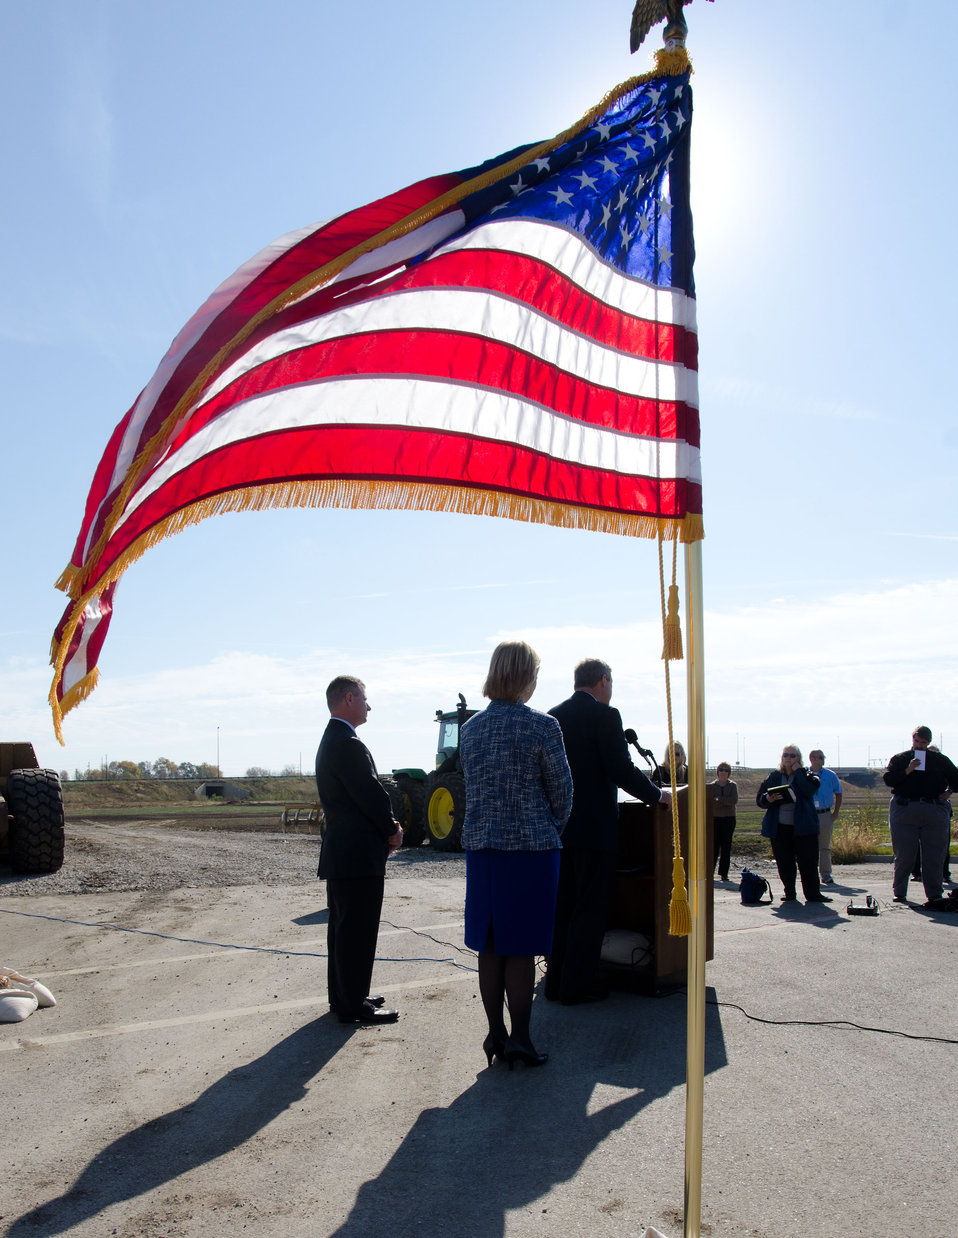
U.S. Department of Agriculture Secretary Tom Vilsack (at podium), Illinois Department of Transportation Acting Secretary of Transportation Ann Schneider (second from l.) and Sangamon County Recorder of Deeds (left) visited a recently completed transportation project that extended the existing MacArthur Boulevard and new interchange with Interstate 72, that brought new businesses and 500 new jobs to Springfield, IL on November 2, 2011. Agriculture Secretary Tom Vilsack discussed the Administration's strategy to strengthen the U.S. economy and to highlight what passage of the American Jobs Act will mean for Illinois. 'The American Jobs Act provides common-sense steps we can take right now to put more people back to work and put more money in the pockets of working Americans, without adding a dime to the deficit,' said Secretary Vilsack. 'In Illinois, this Act will provide a tax cut for over 260,000 businesses, support the jobs of 14,500 teachers and first responders and immediately provide a job for over 20,700 construction workers through infrastructure improvements. A typical household in Illinois will receive a tax cut of around $1,640.'